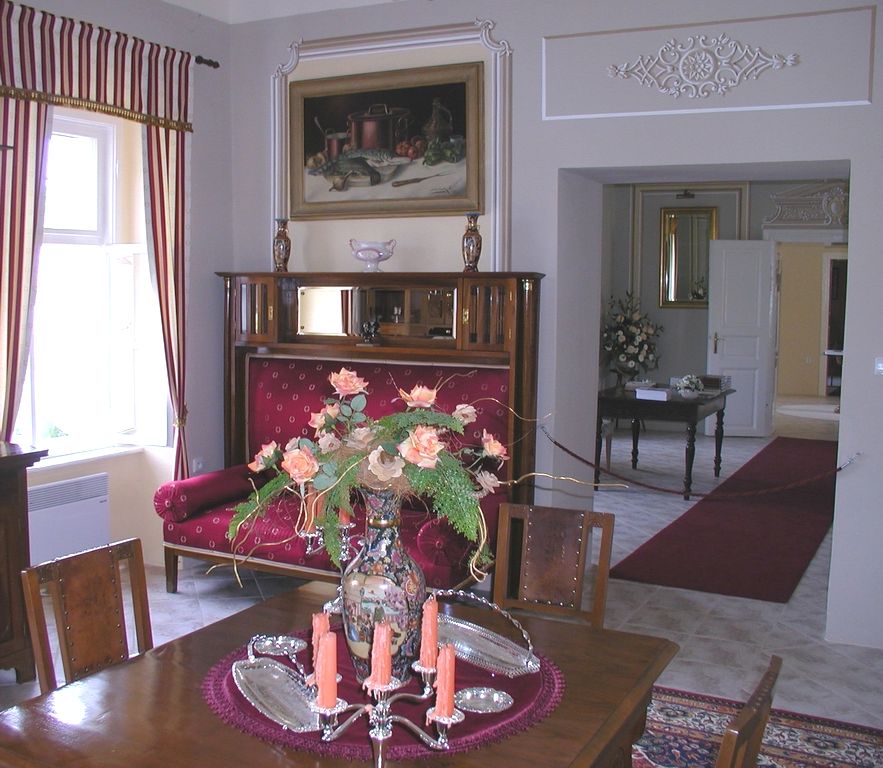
Reprezentačné miestnosti Licencovanie: Autorom fotografie je Imrich Šimonek z Dubníka sk:Kategória:Presunúť na Commons